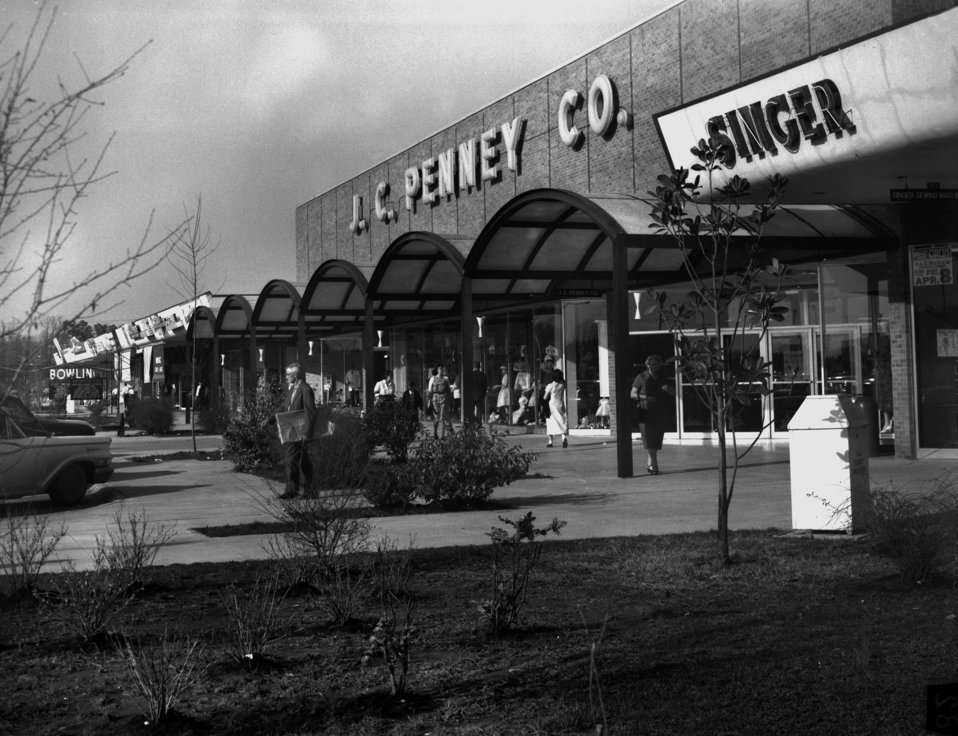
Down Town Center Oak Ridge

60-537f DOE photo by T.R. Cook

Down Town Center Oak Ridge Tennessee May 1960